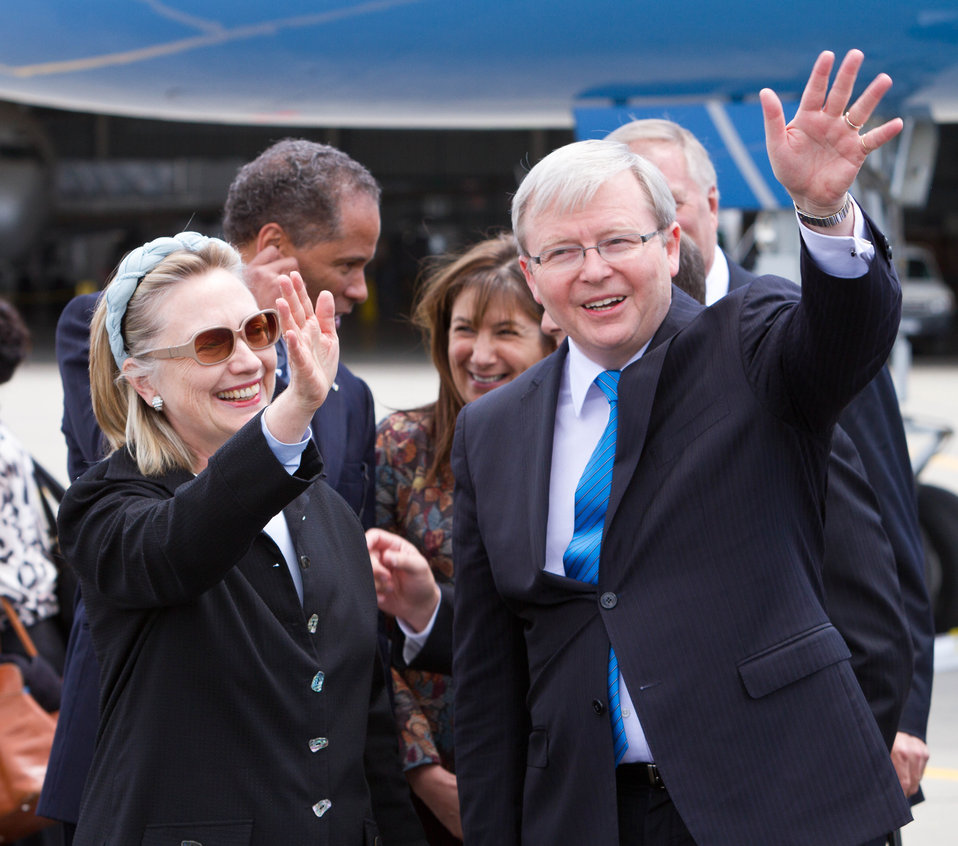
Secretary Clinton and Australian Foreign Minister Rudd Wave

U.S. Secretary of State Hillary Rodham Clinton and Australian Foreign Minister Kevin Rudd wave to the crowd at the Melbourne Airport in Melbourne, Australia, on November 7, 2010.